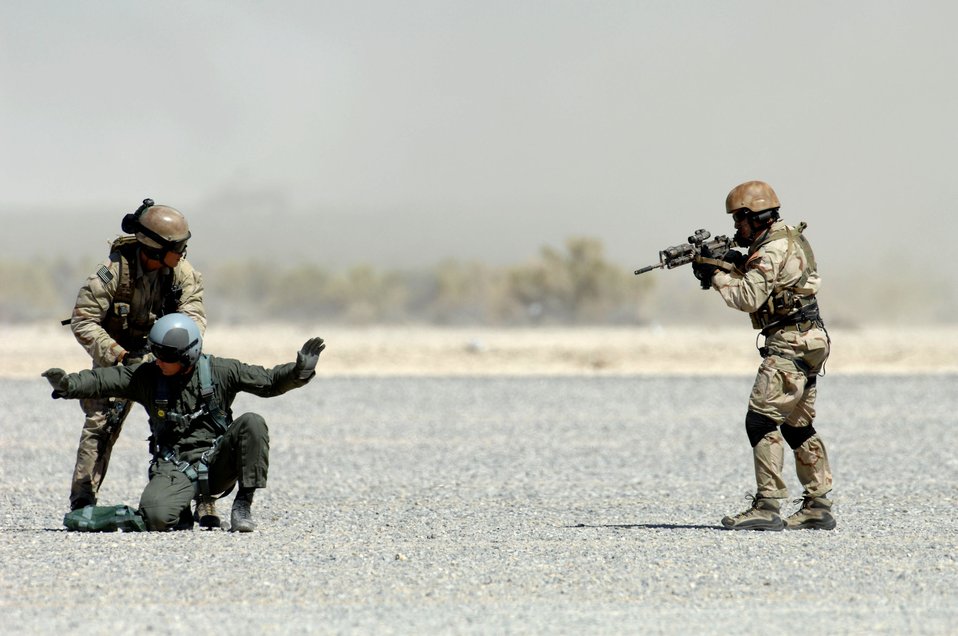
Show of force

Pararescuemen from the 58th Rescue Squadron at Nellis Air Force Base, Nev., demonstrate combat search and rescue operations while rescuing a simulated downed pilot during a firepower demonstration Sept. 14 on the Nevada Test and Training Range. The demonstration gave the general public a close-up and realistic view into the Air Force's ability to perform its wartime mission.